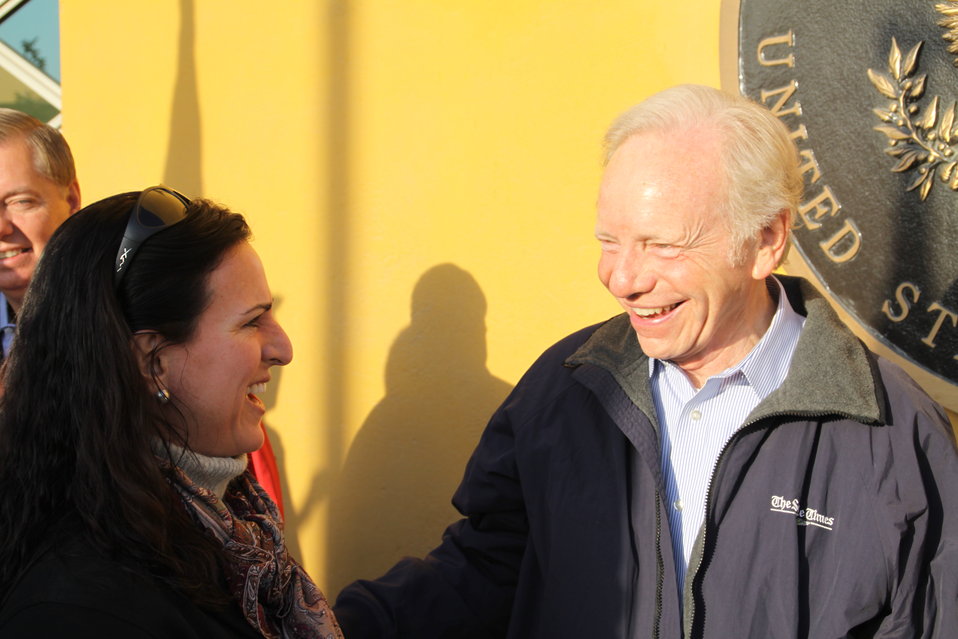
Senator Lieberman